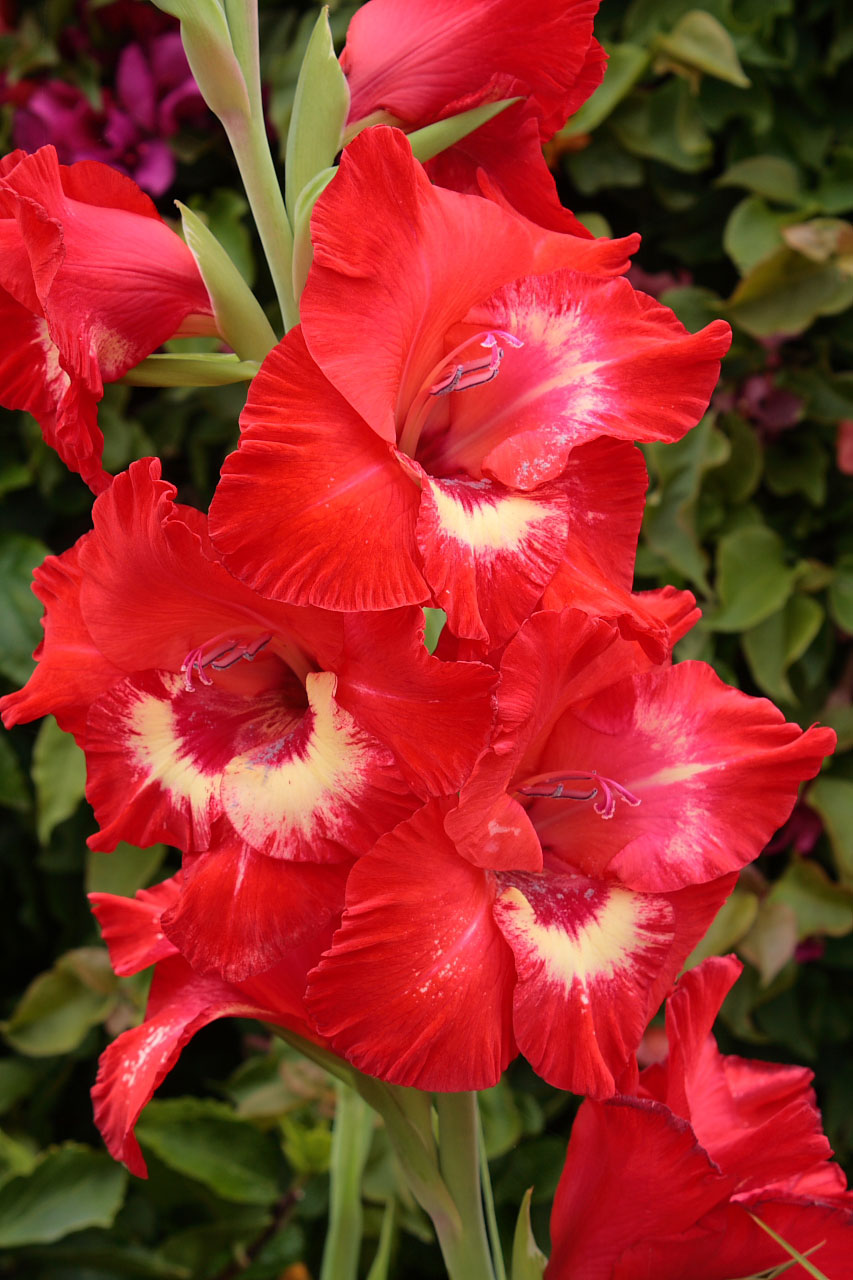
Red and white gladiolus

Stalk with multiple red and white gladiolus blossoms.